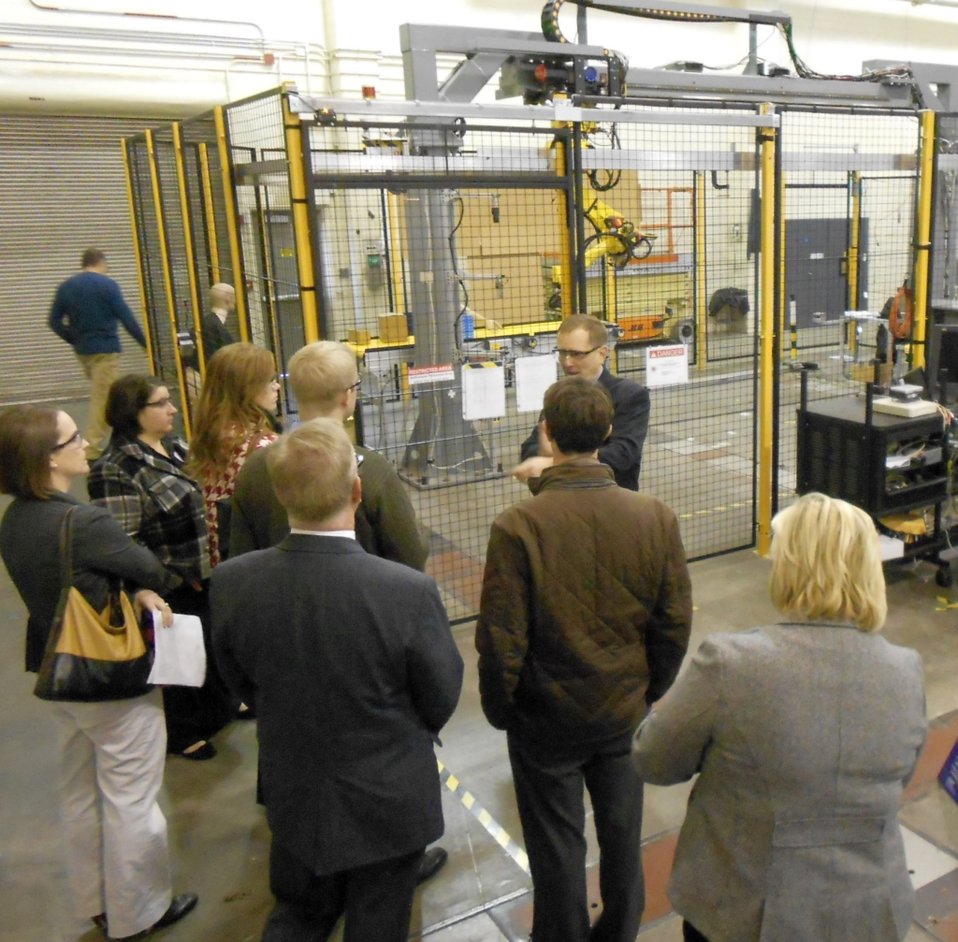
Machine Lab Tour #2

Kevin Jurrens (center) of the Intelligent Systems Division in the NIST Engineering Laboratory briefs Congressional Staff from the House of Representatives Committee on Science, Space, and Technology on the advanced manufacturing test bed located in NIST’s machine shop.